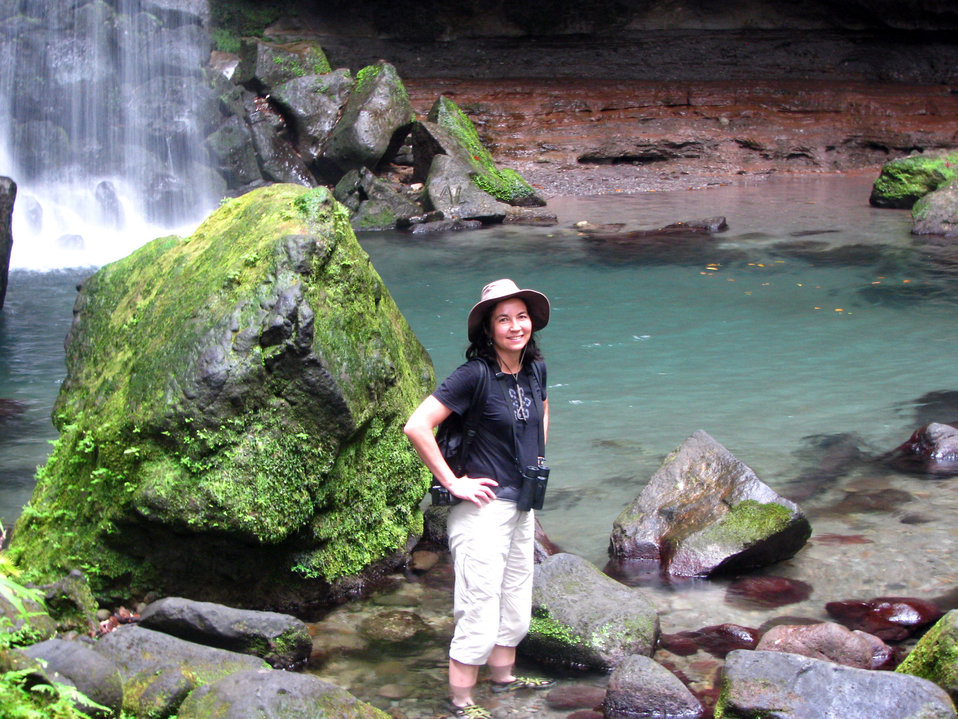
Lisa Sorenson Credit Michele Kading

Lisa Sorenson, President of the Society for the Conservation and Study of Caribbean Birds (SCSCB) and winner of the Partners in Flight Leadership Award 2011.